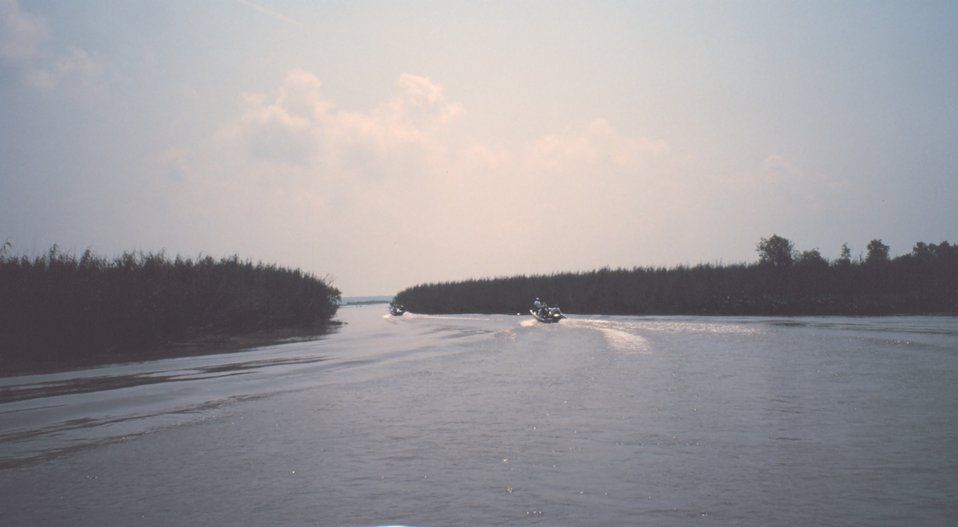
Boats moving through coastal bayou lined with Phragmites, commonly called roseau cane.